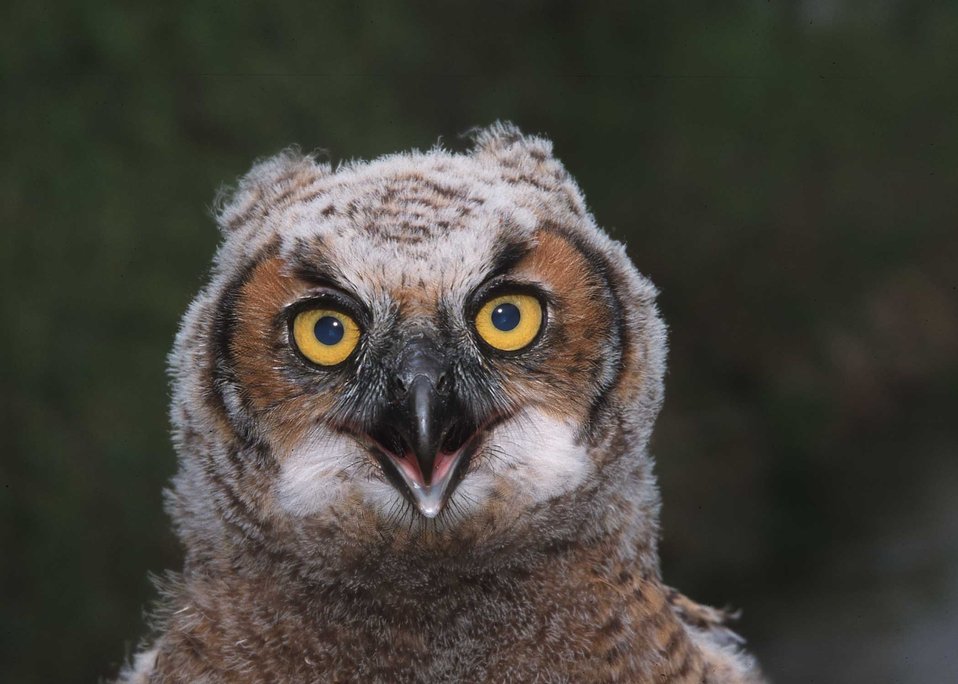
A great horned owl in a conservation buffer along Bear Creek, Iowa.